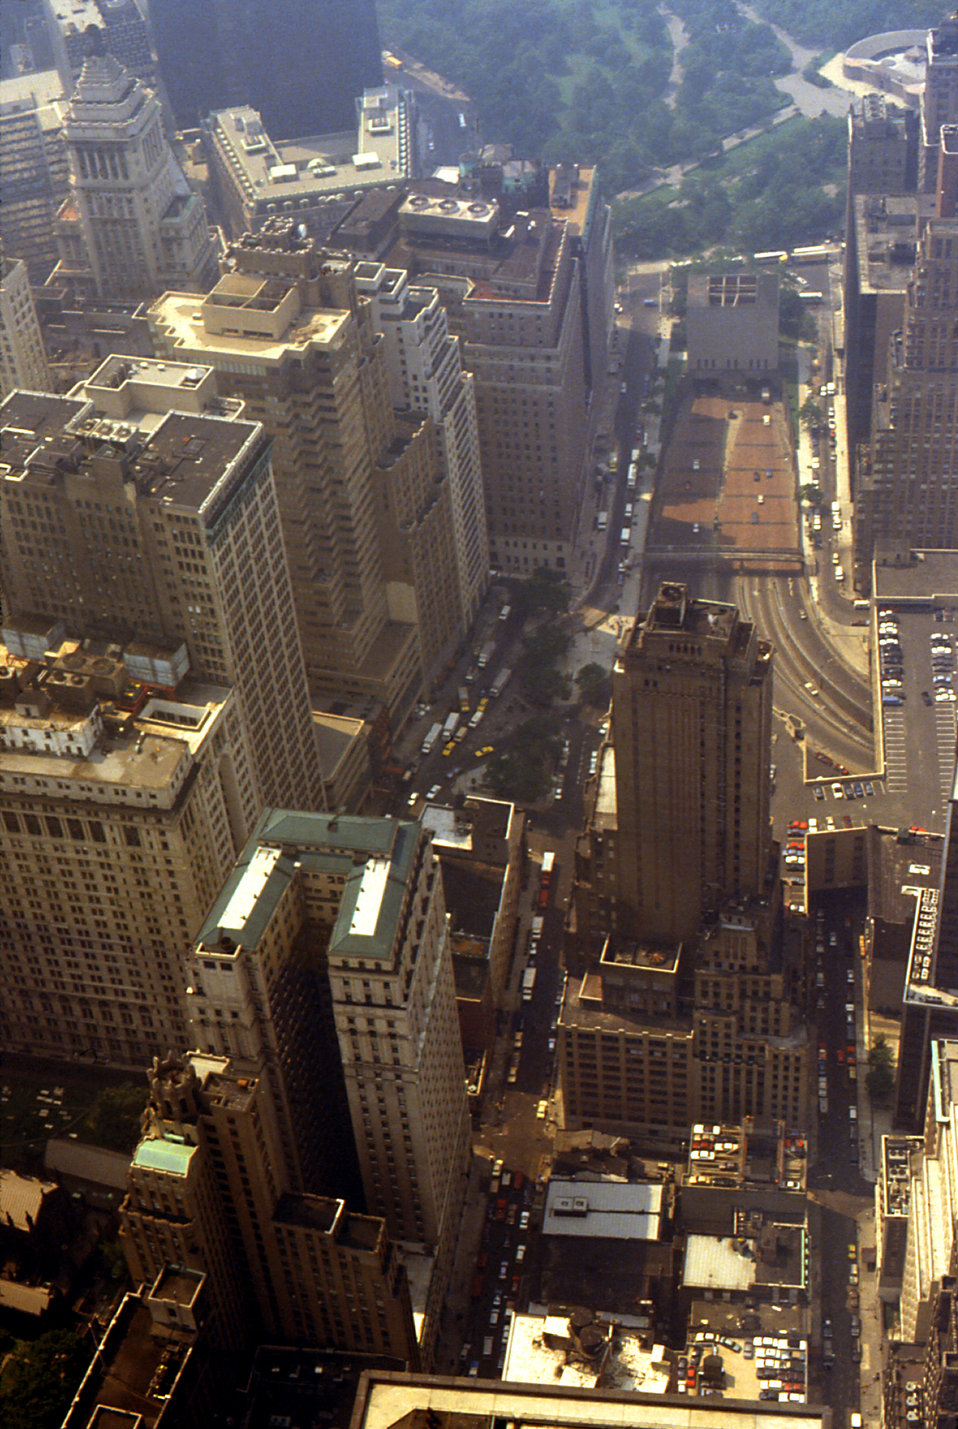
This 1988 'aerial' view of Manhattan was taken while looking south from the 110th floor of the former World Trade Center Tower 2, also known as the South Tower, in New York City, New York. The beginning of Battery Park, on the southern tip of the island, is visible at the top of the photograph.